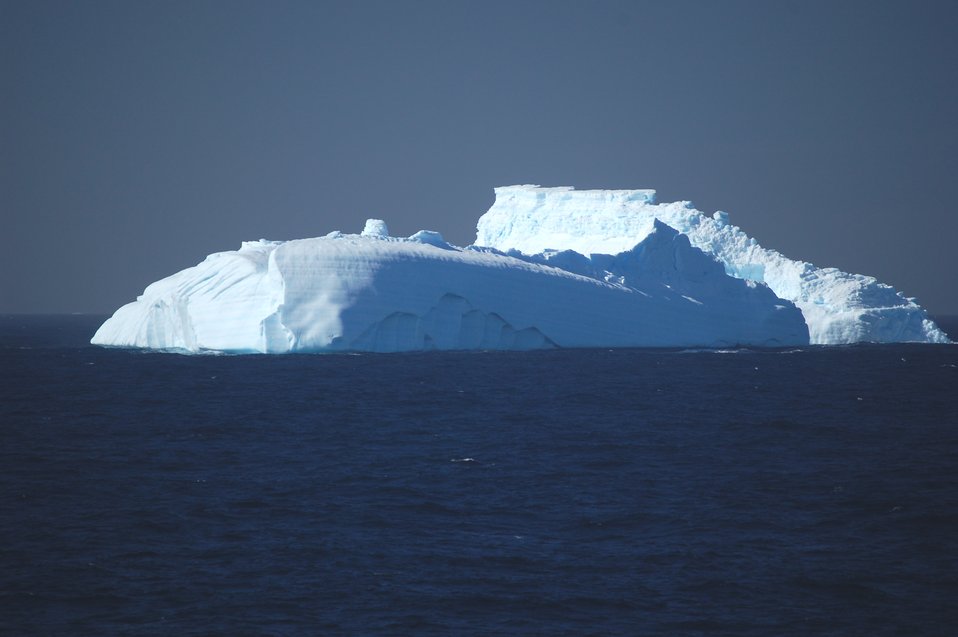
Icebergs